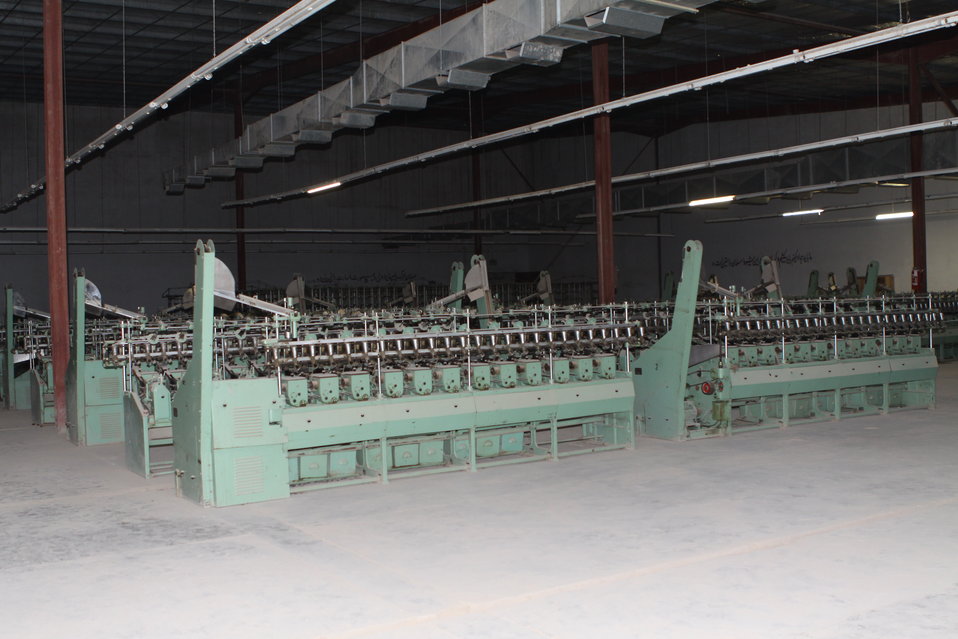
100525 Hirat Textile Company 748